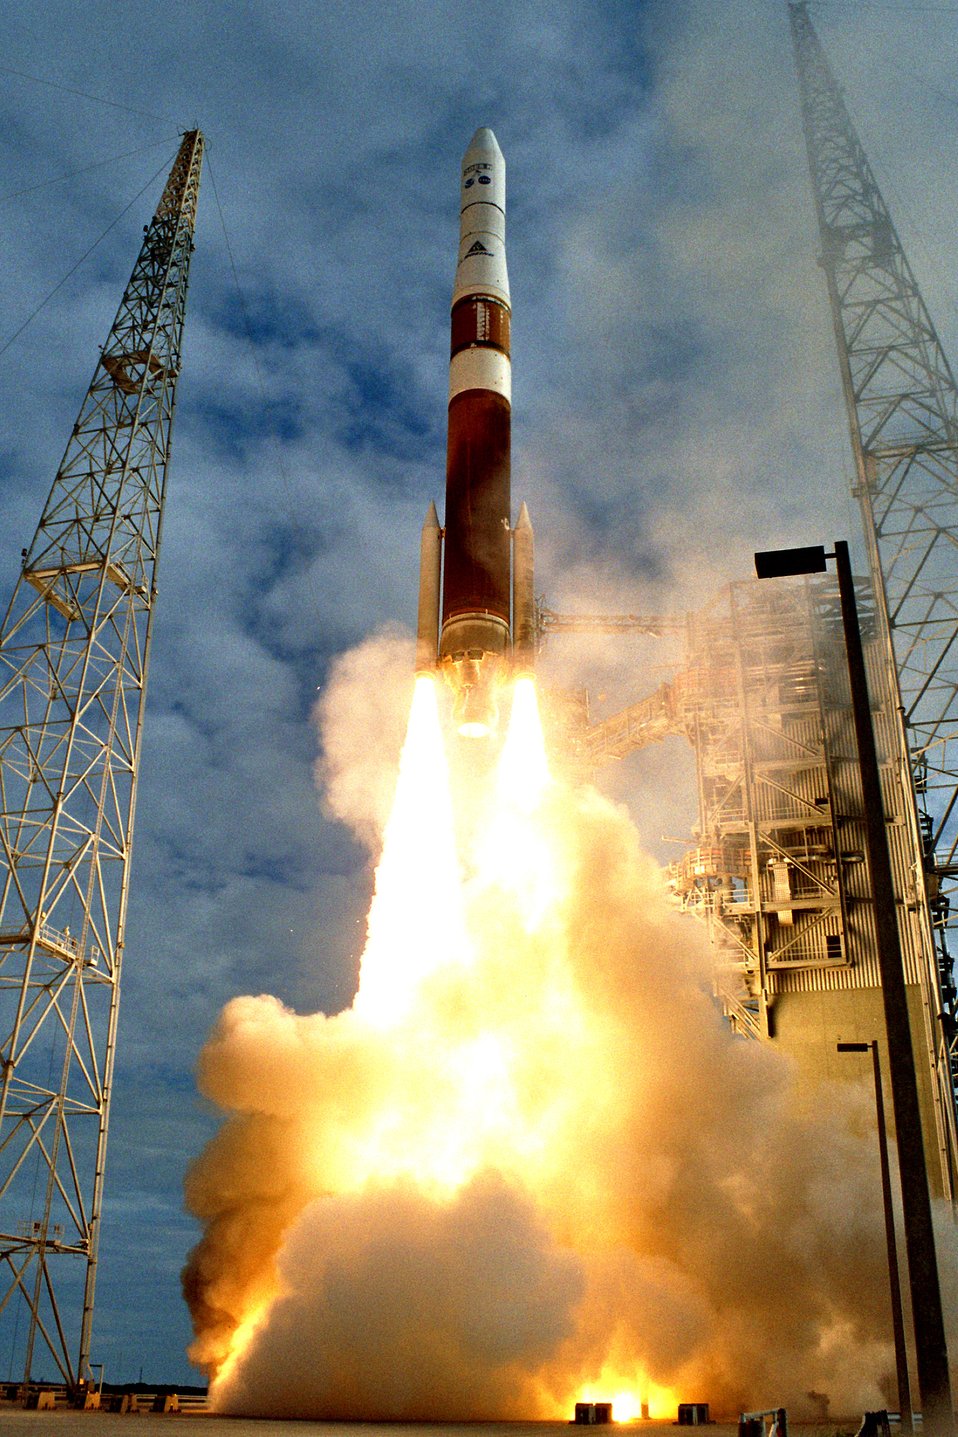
Launch of weather-tracking satellite successful

A weather satellite is successfully launched on a Delta IV booster on Wednesday, May 24, 2006, from Space Launch Complex 37B at Cape Canaveral Air Force Station, Fla.